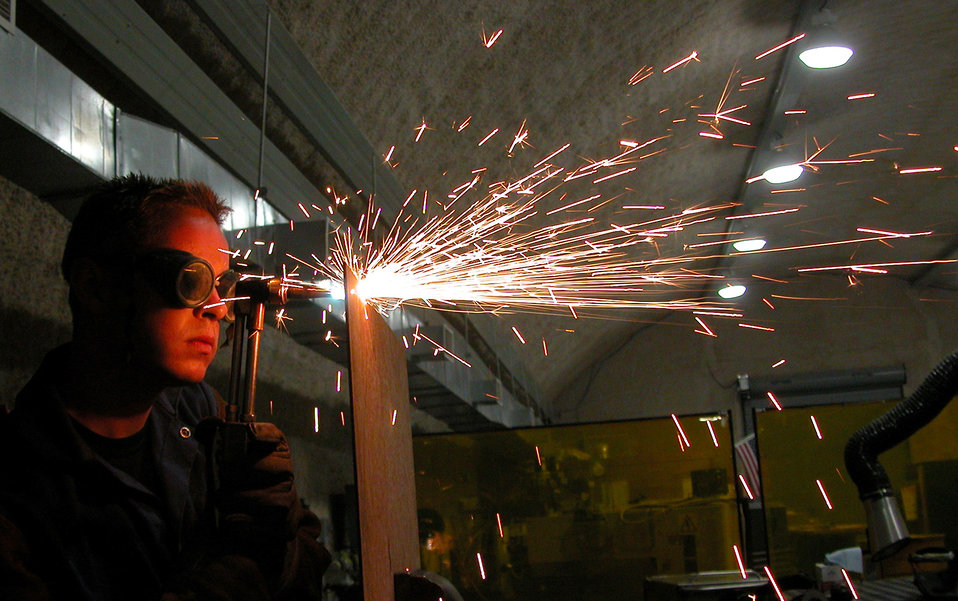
A spark-tacular job

SOUTHWEST ASIA -- Airman 1st Class Matthew Pietsch cuts a piece of metal with a torch at a forward-deployed location. He is assigned to the 379th Expeditionary Maintenance Squadron and is deployed from Royal Air Force Lakenheath, England, supporting operations Enduring Freedom and Iraqi Freedom.